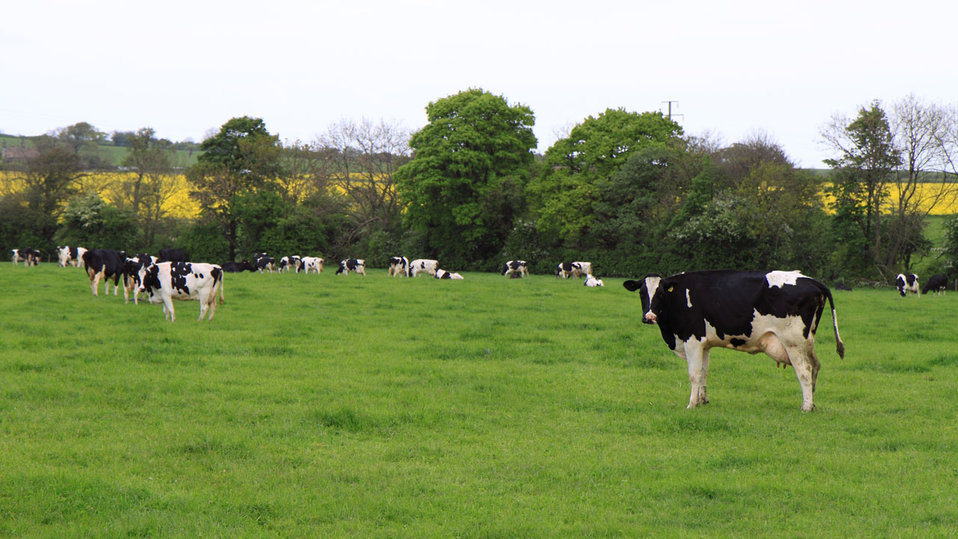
Cows grazing

Herd of cows on pasture.